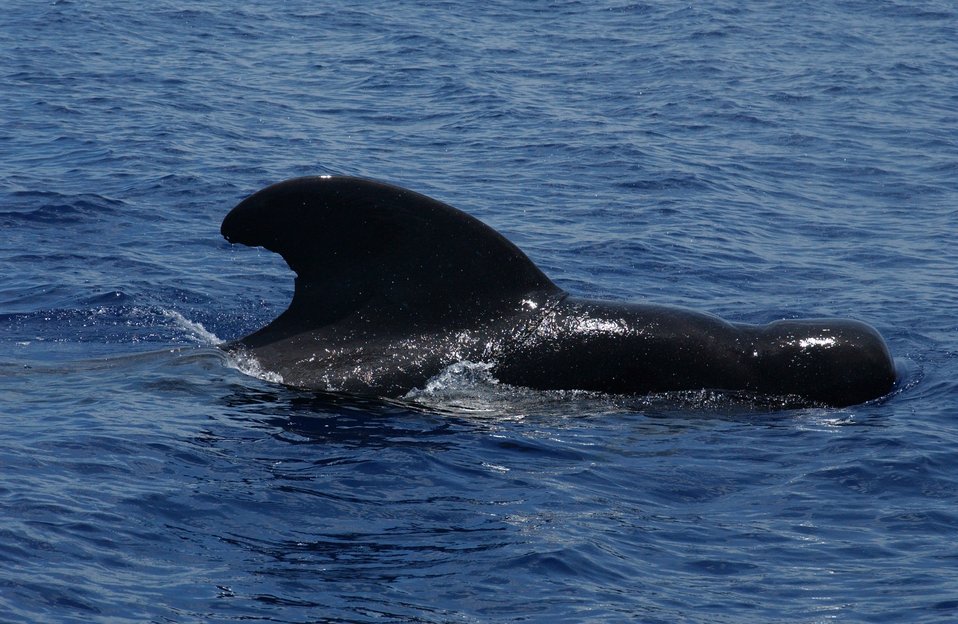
Pilot whale